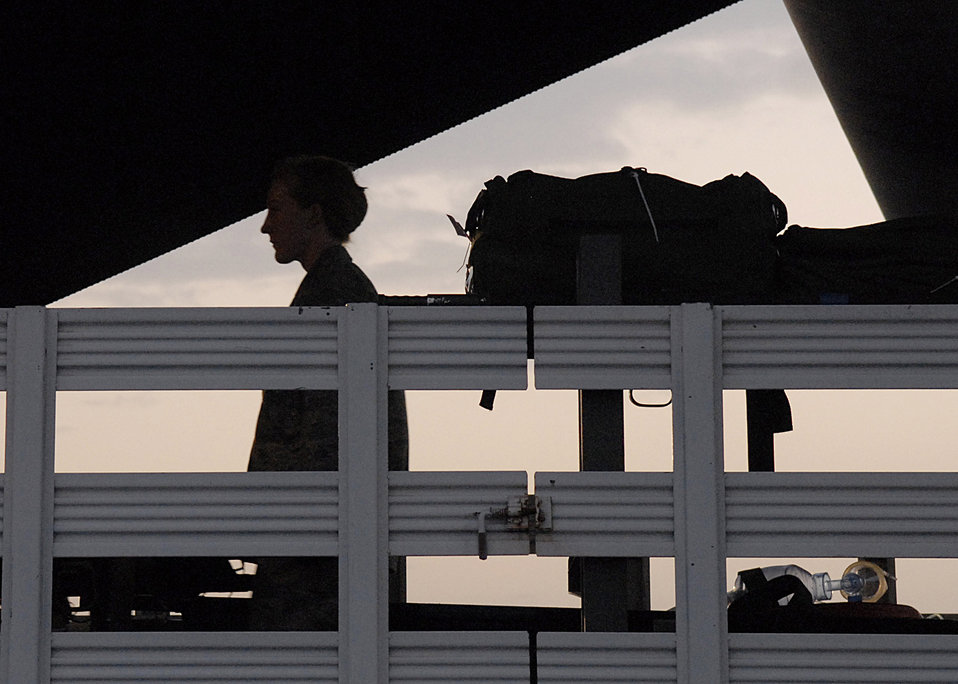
Airmen transport, care for wounded warriors

Staff Sgt. Rebecca Jaudon carries a litter onto a C-130 Hercules Jan. 11 at an air base in Southwest Asia. The ground crew loads medical supplies onto aircraft to support patients being transported in the area of operations. Sergeant Jaudon is a 379th Expeditionary Aeromedical Evacuation Squadron ground crew.